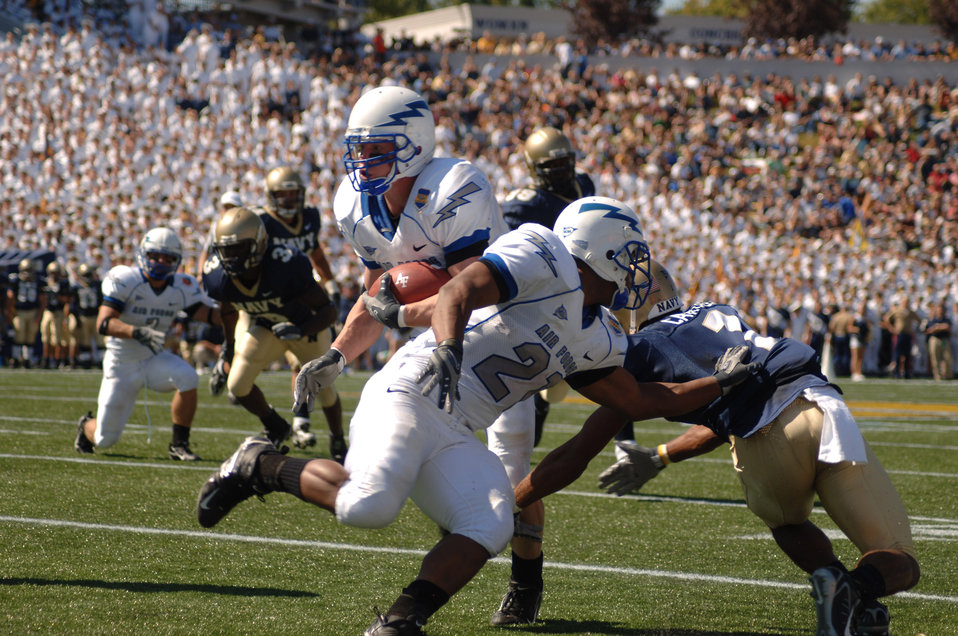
Football: Falcons fall to Navy, 31-20

U.S. Air Force Academy Falcon tailback Kip McCarthy eyes extra yardage while fullback Ryan Williams attempts to block Navy safety Blake Carter during Air Force's 31-20 loss to the Midshipmen Sept. 29 at Annapolis, Md. The Falcons gained 237 yards on the ground.